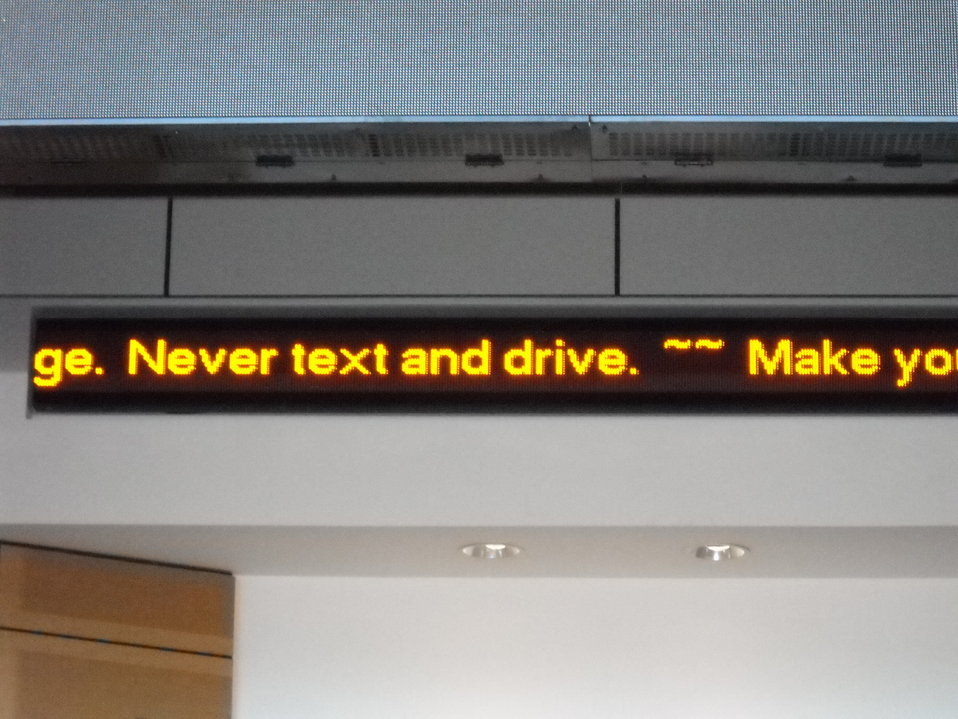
National No Phone Zone Day Newsum Washington, DC April 30, 2010 011